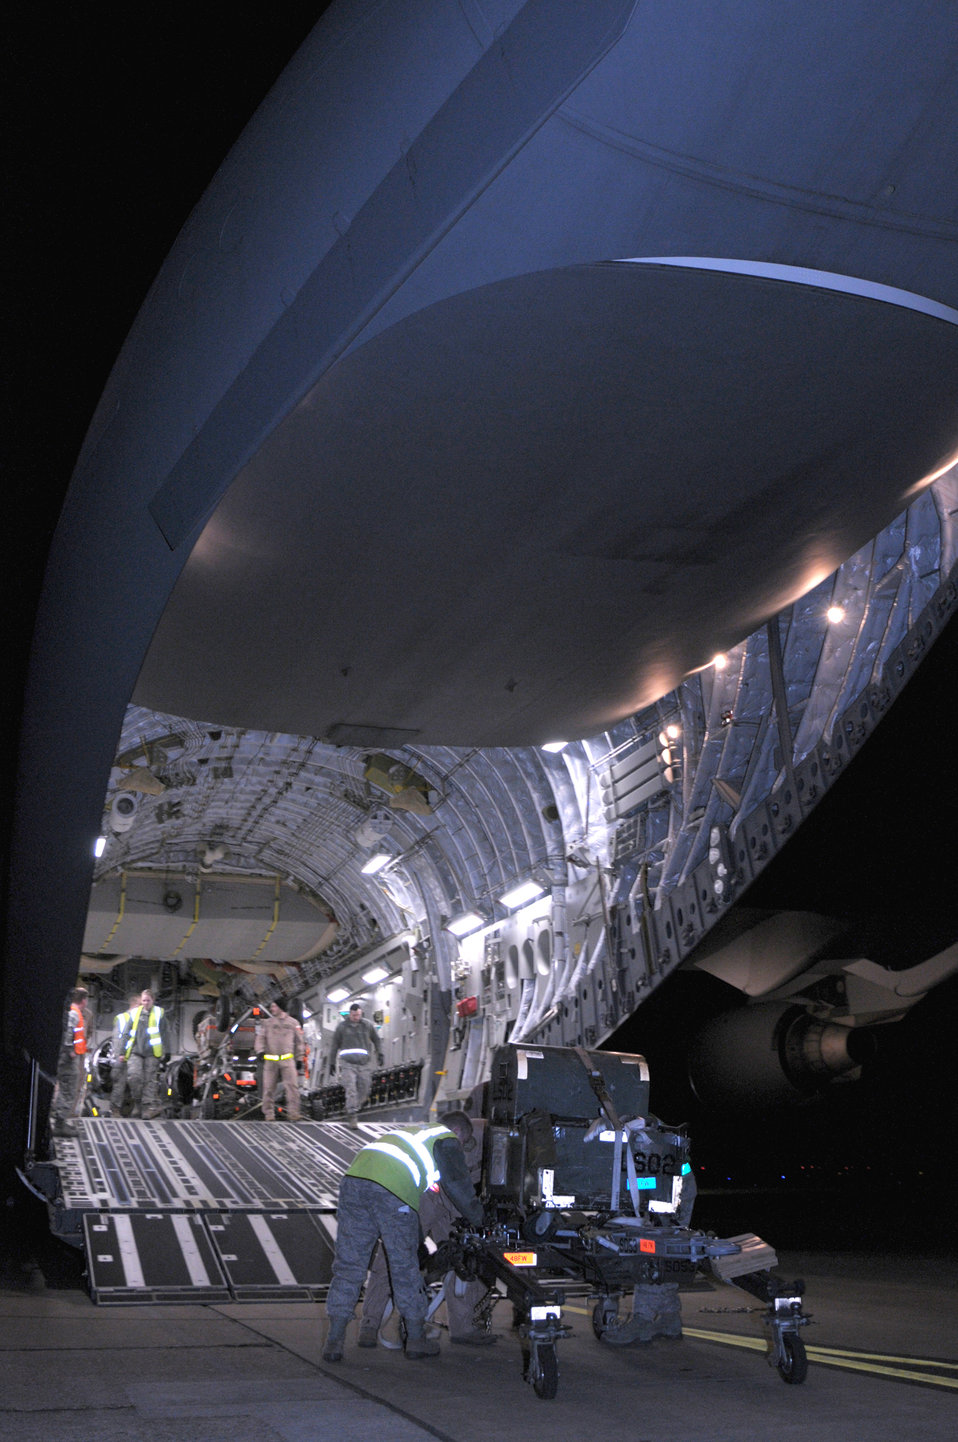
Operation Odyssey Dawn

Airmen from the 48th Fighter Wing and members of the Heavy Airlift Wing, Papa Air Base, Hungary, load equipment on a C-17 Globemaster III in support of Operation Odyssey Dawn on Royal Air Force Lakenheath, England, March 19, 2011. Members of the 48th Fighter Wing were recently notified that they would be supporting efforts in Operation Odyssey Dawn. The 48th FW provides all-weather, day or night air superiority and air-to-ground precision combat capability as well as combat search and rescue capabilities.